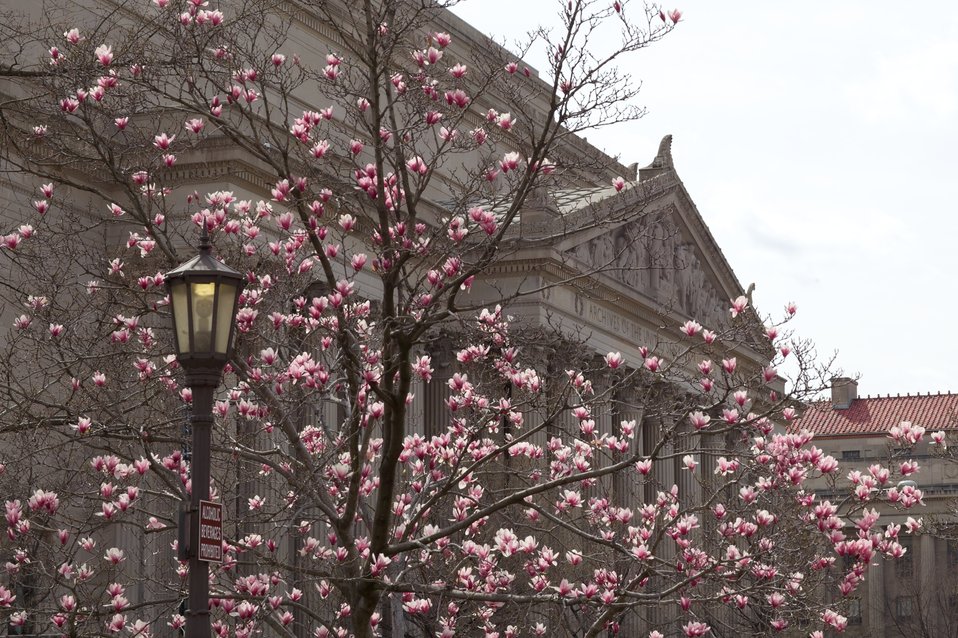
Blooming Magnolias in Indiana Plaza, catty-corner from the National Archives in Washington, DC